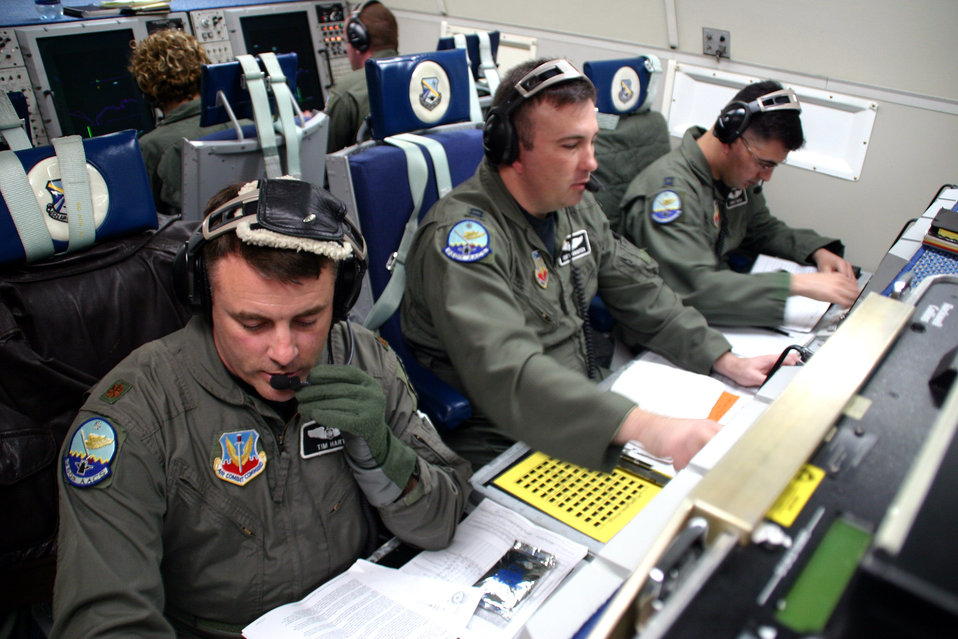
AWACS' special mission: Track Santa

Maj. Tim Hart, Capt. Curtis Knighten and Capt. James Garza conduct air surveillance and command and control operations from an E-3 Sentry. The members of the 960th Airborne Air Control Squadron are preparing for a Christmas Eve Santa tracking mission. Airborne warning and control systems crews will provide additional surveillance as part of Operation Just Claus.